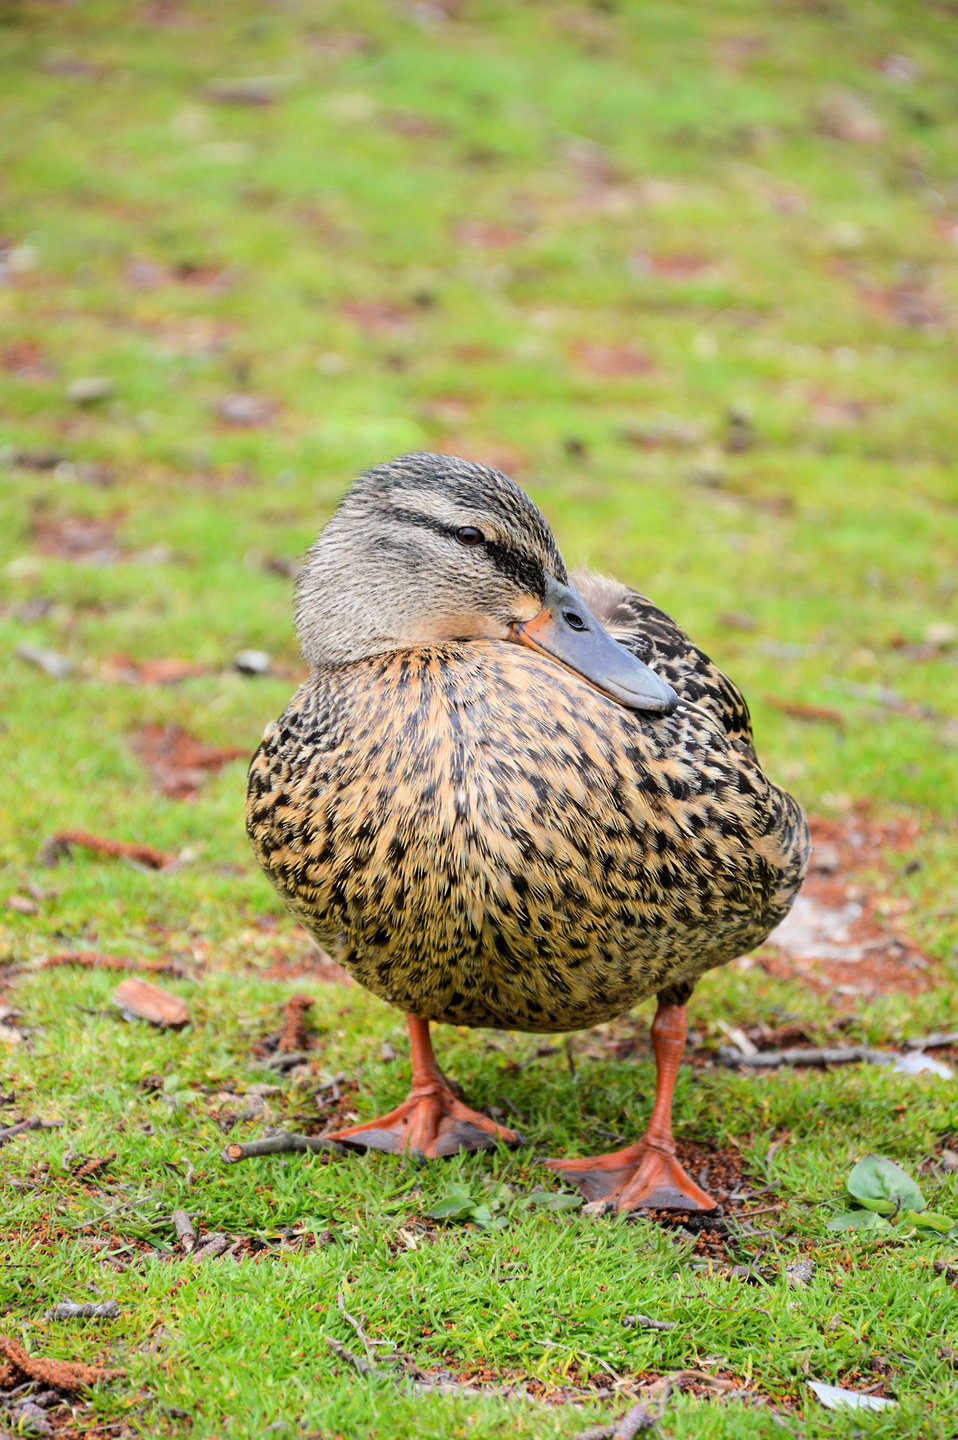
Duck chest

Duck with chest out.